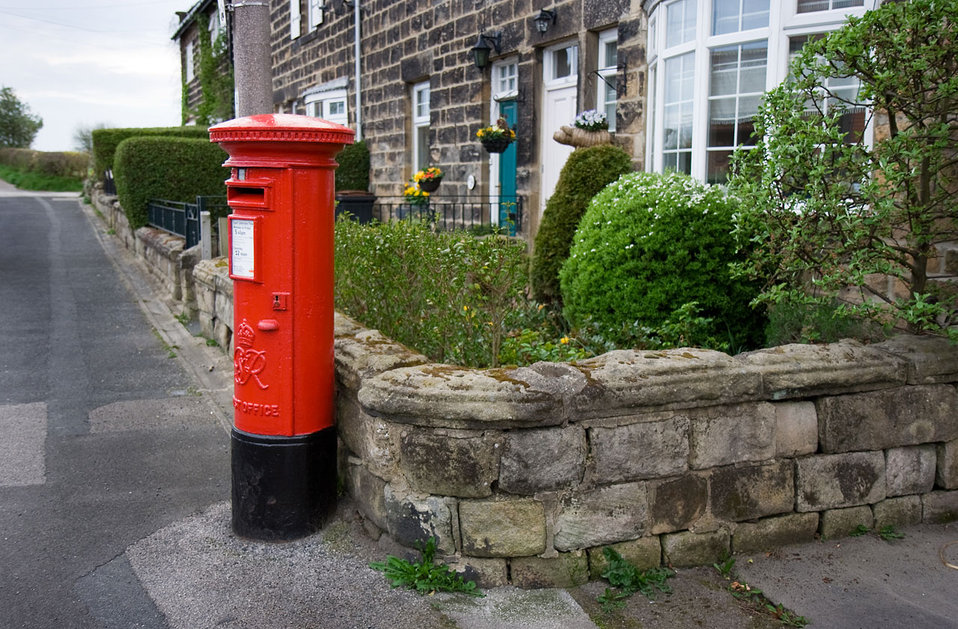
Post box

A traditional british post box.